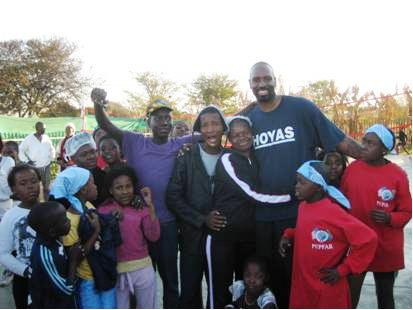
U.S. Embassy Pretoria Political Officer Freeman With South African Children

U.S. Embassy Pretoria Political Officer Courtland Freeman poses for a photo with South African children from the Moepathutse Children's Center in Pretoria, South Africa, on July 19, 2010.